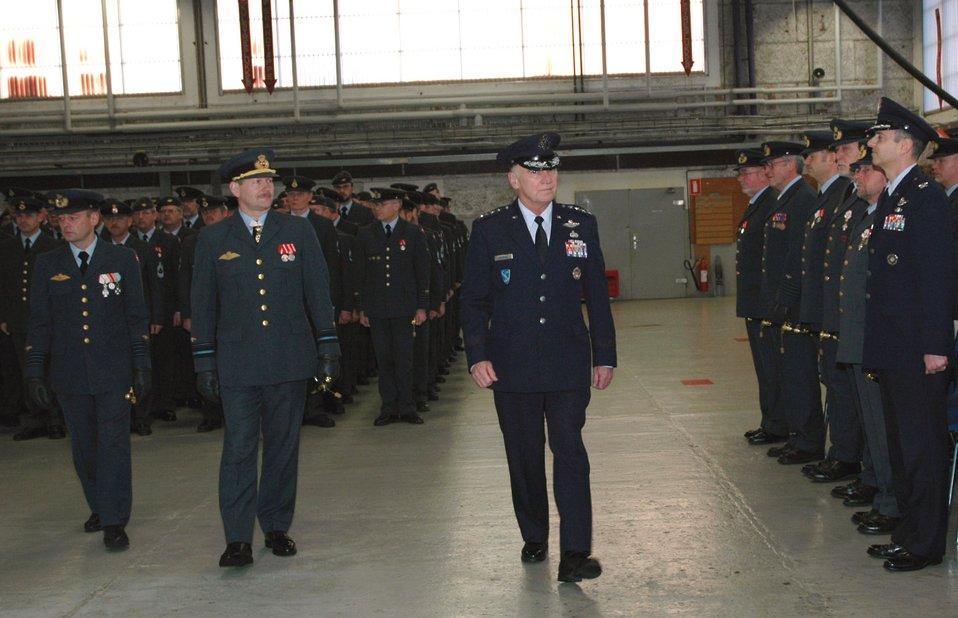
USAFE commander awards Air Medals to Danish pilots

Gen. William T. Hobbins marches in an award ceremony Jan. 2 at Fighter Wing Skrydstrup, Denmark. During the ceremony, General Hobbins presented 35 U.S. Air Medals to Danish F-16 pilots who flew in support of Operation Enduring Freedom from October 2002 to October 2003. General Hobbins is the U.S. Air Forces in Europe commander.